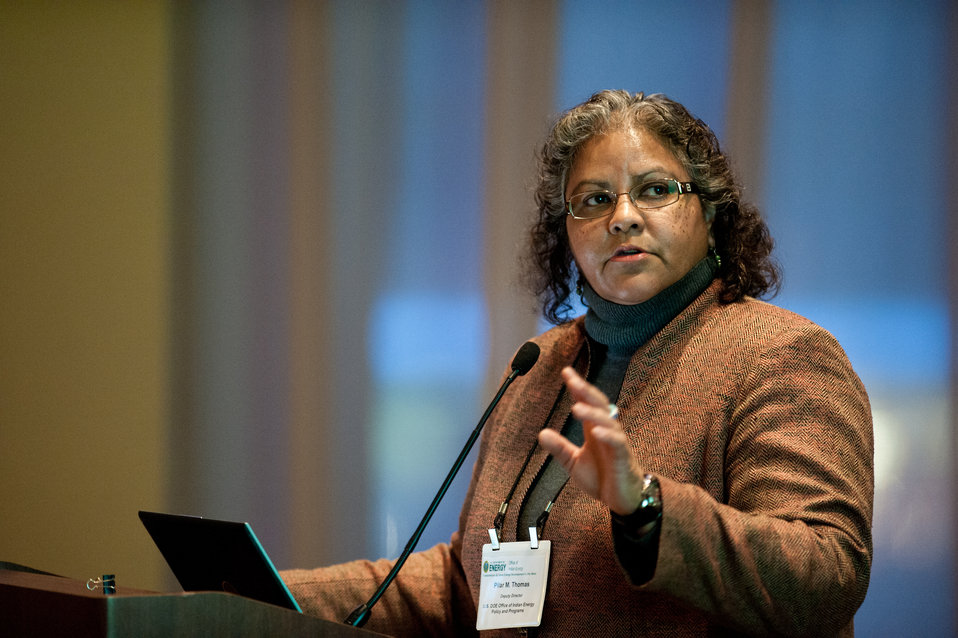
Indian Transmission Forum

Office of Indian Energy Deputy Director Pilar Thomas speaking during the Tribal Leader Energy Forum on transmission held February 2012 in Denver, Colorado.